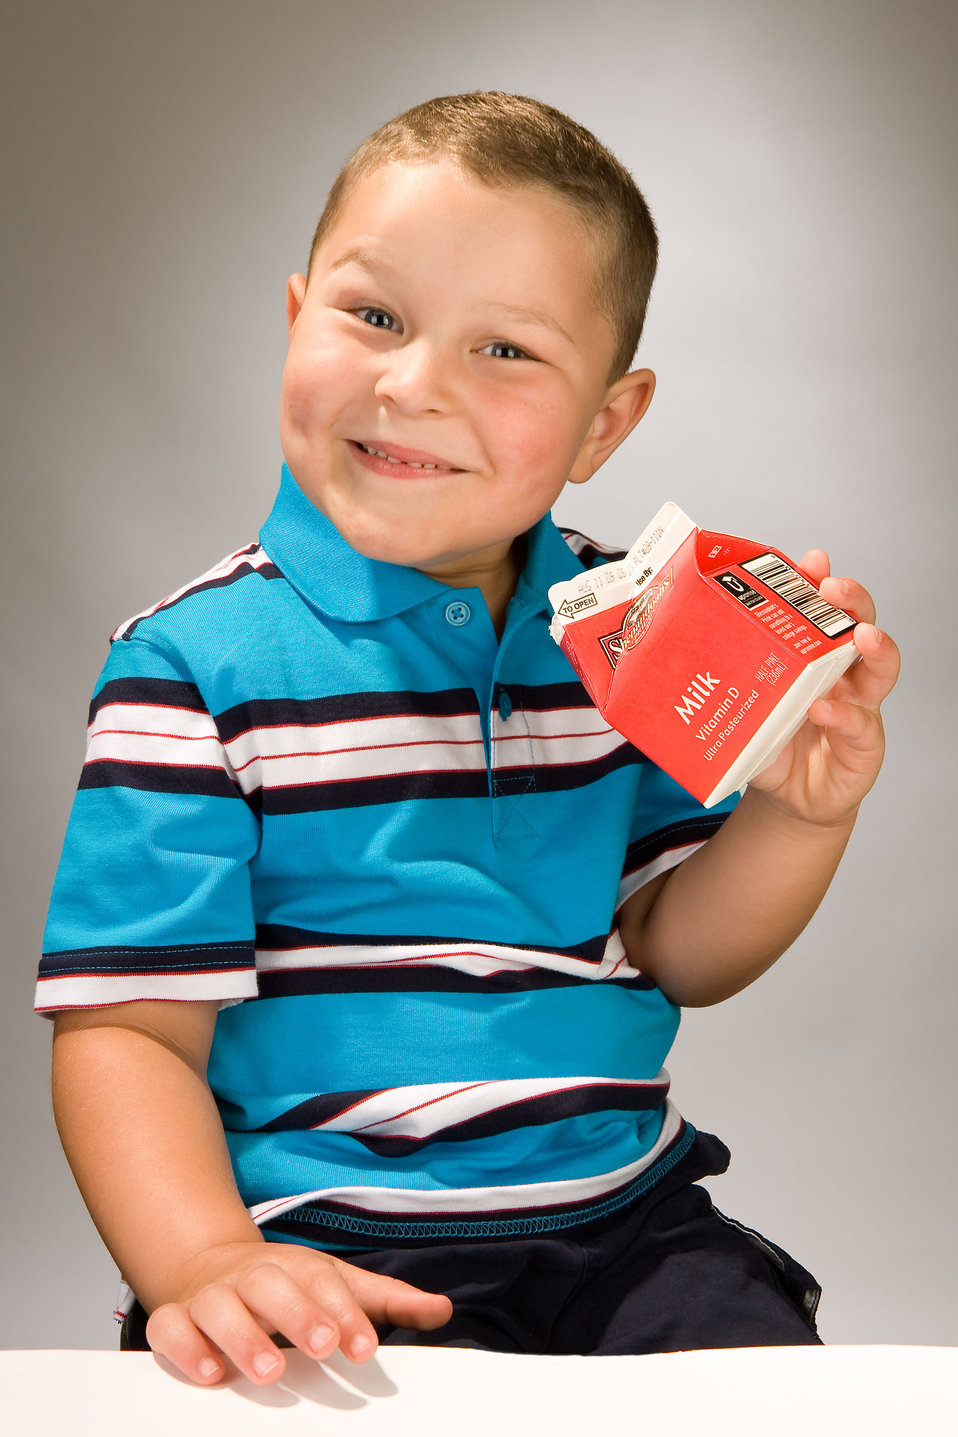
A young boy holds a carton of milk on July 31, 2009.